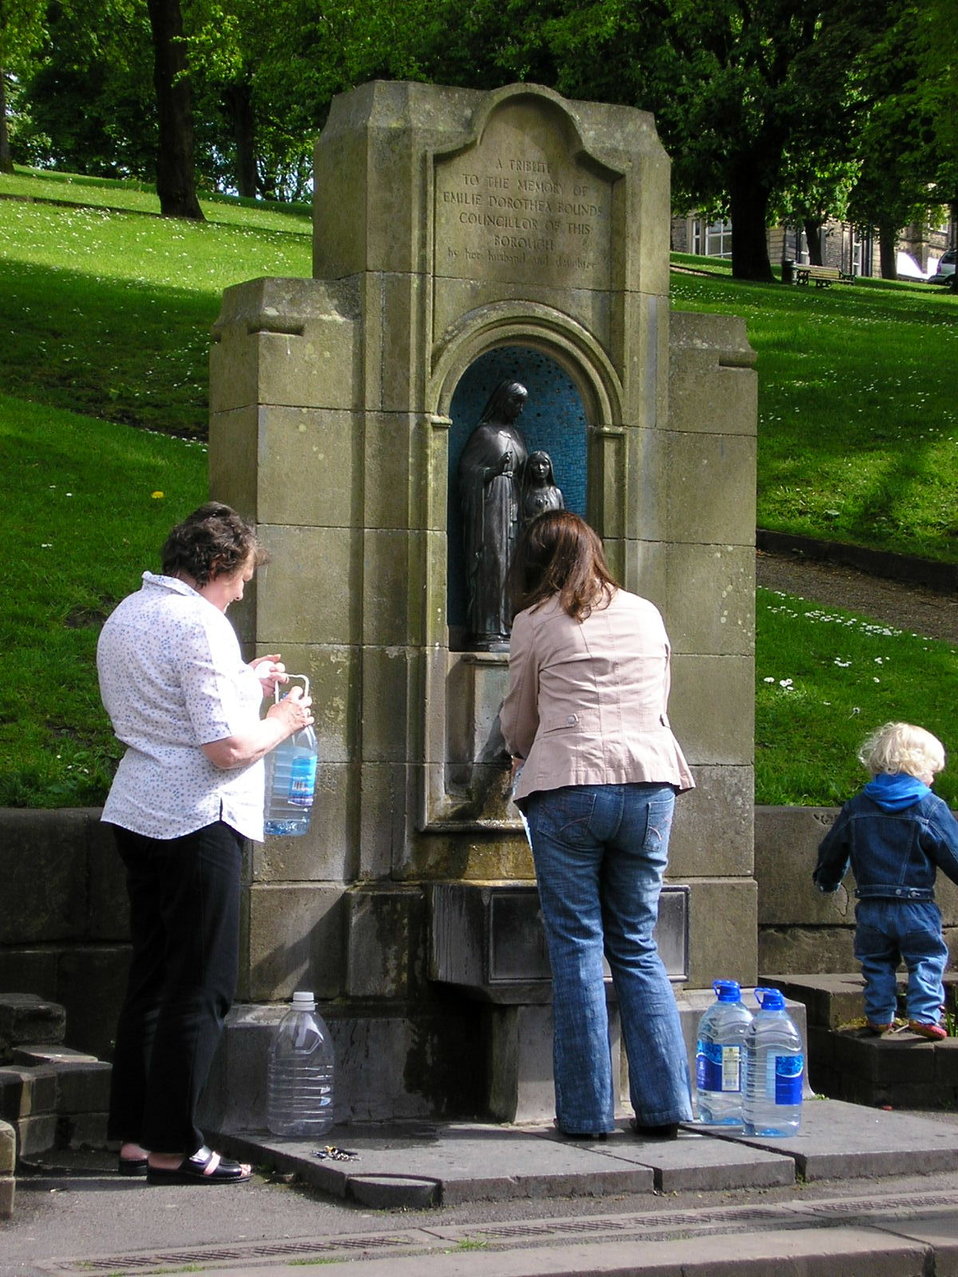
St Ann's Well in The Crescent in the spa town of Buxton, Derbyshire. grid reference SK 0578 7348 . When he had filled a bottle here, our son asked 'how do I turn it off?'. It was pointed out to him that the water had been running continuously since the end of the last Ice Age at least and that there was no need to turn it off. Most of the water from this spring is bottled and sold commercially but there may well be an ancient endowment that requires it to be available free of charge. Certainly there is a continuous stream of people filling their bottles here - another pic.